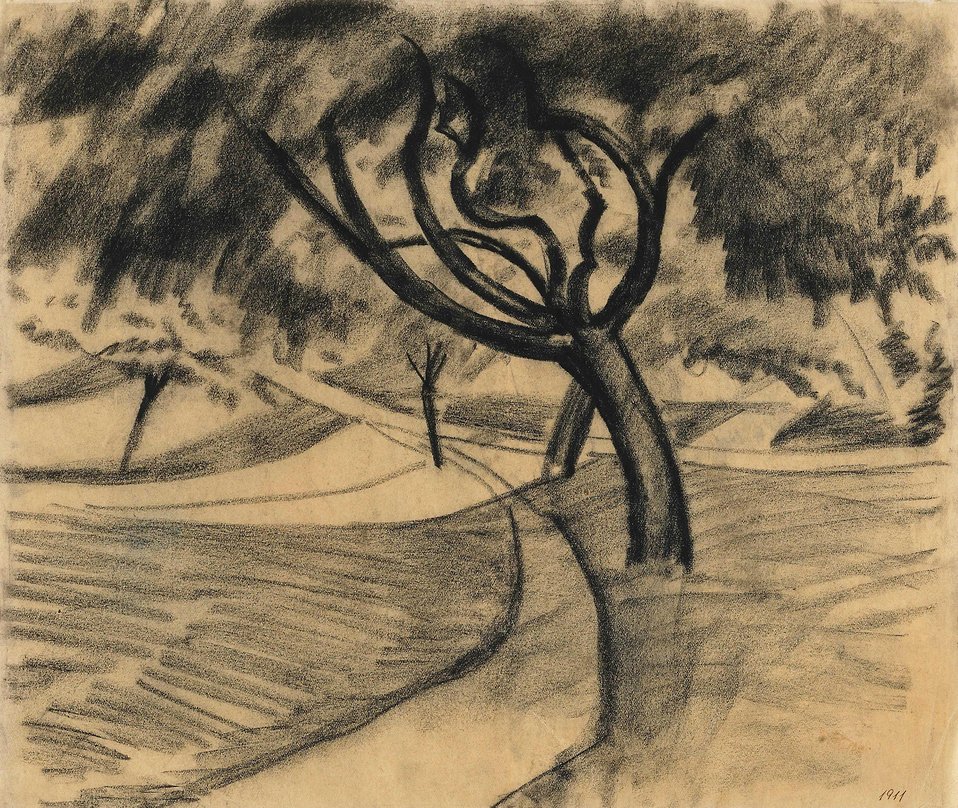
Baum und Felder, Kohle auf transparentem Papier. 27 x 32 cm. Bezeichnet unten rechts mit Tinte: 1911. Ovaler Nachlassstempel (Lugt 1775 b) verso oben Mitte. Daneben von Elisabeth Erdmann-Macke mit Bleistift betitelt und datiert.